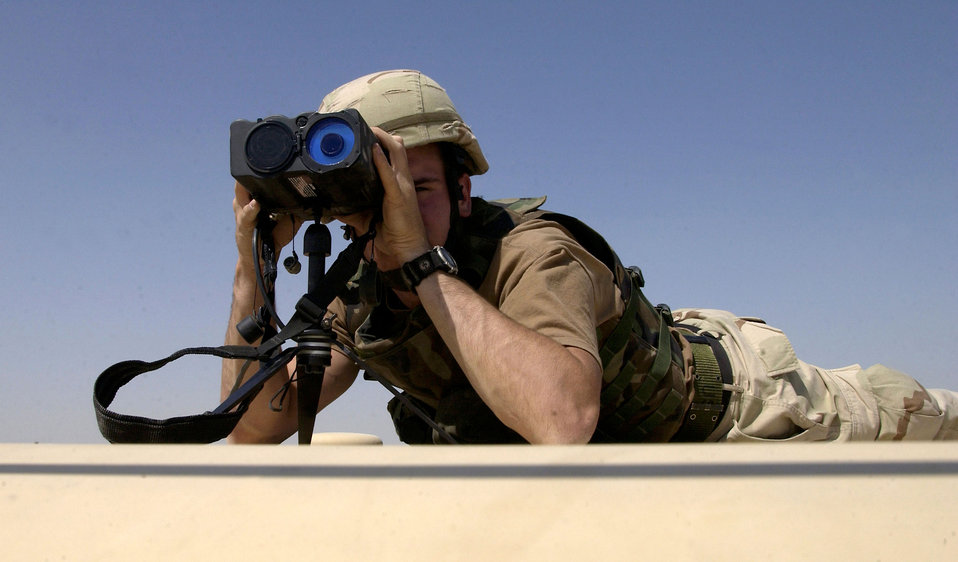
Pinpoint range

OPERATION IRAQI FREEDOM -- Airman 1st Class Walter Sass III uses a laser range finder to get exact targeting information during a training mission near Baghdad, Iraq. Sass is with the 1st Expeditionary Air Operations Support Squadron and deployed from the 1st Air Operations Support Squadron at Baumholder, Germany.